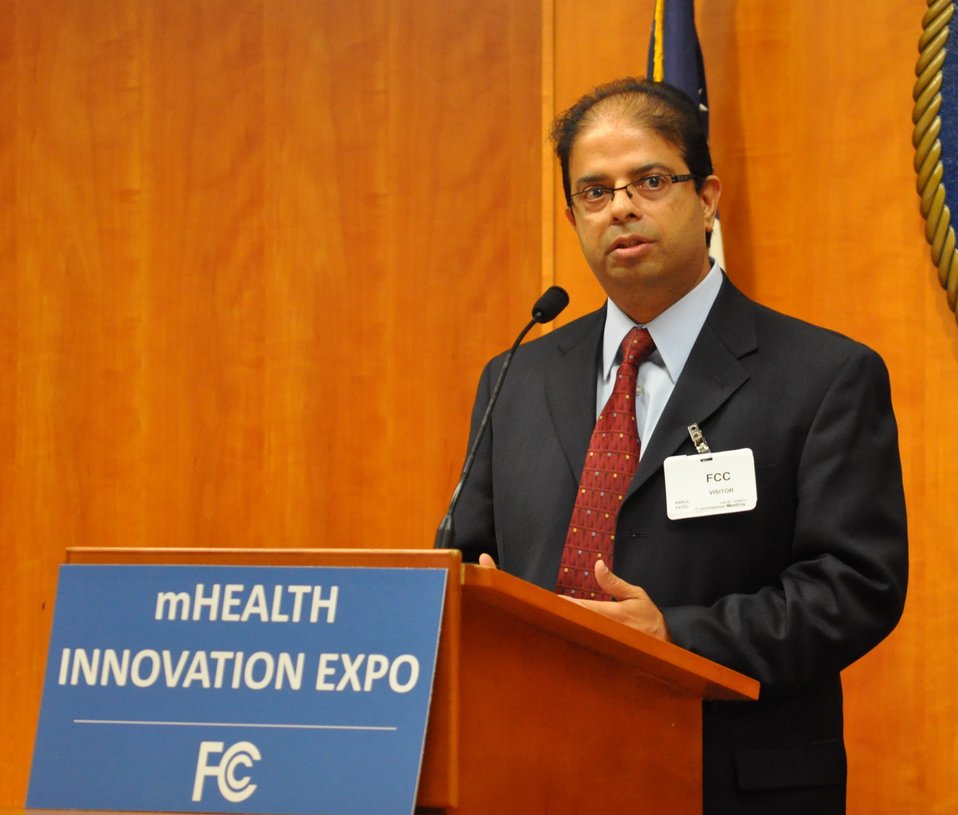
12.6.13 mHealth Innovation Expo

: Bakul Patel, Senior Policy Advisor to the Center Director, Center for Devices and Radiological Health, Food Drug Administration (FDA)